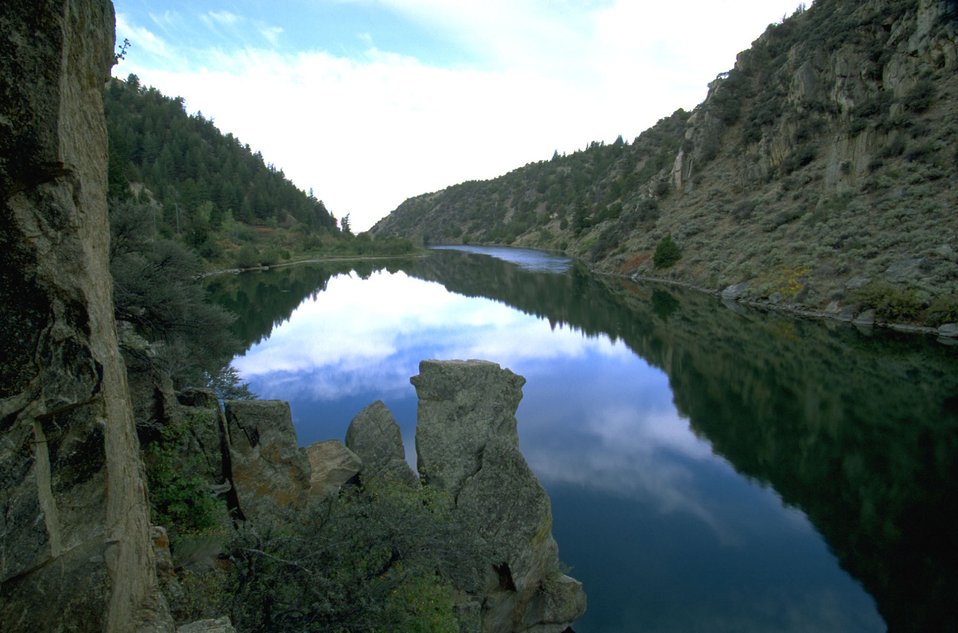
Rock Pillars jutting over calm water